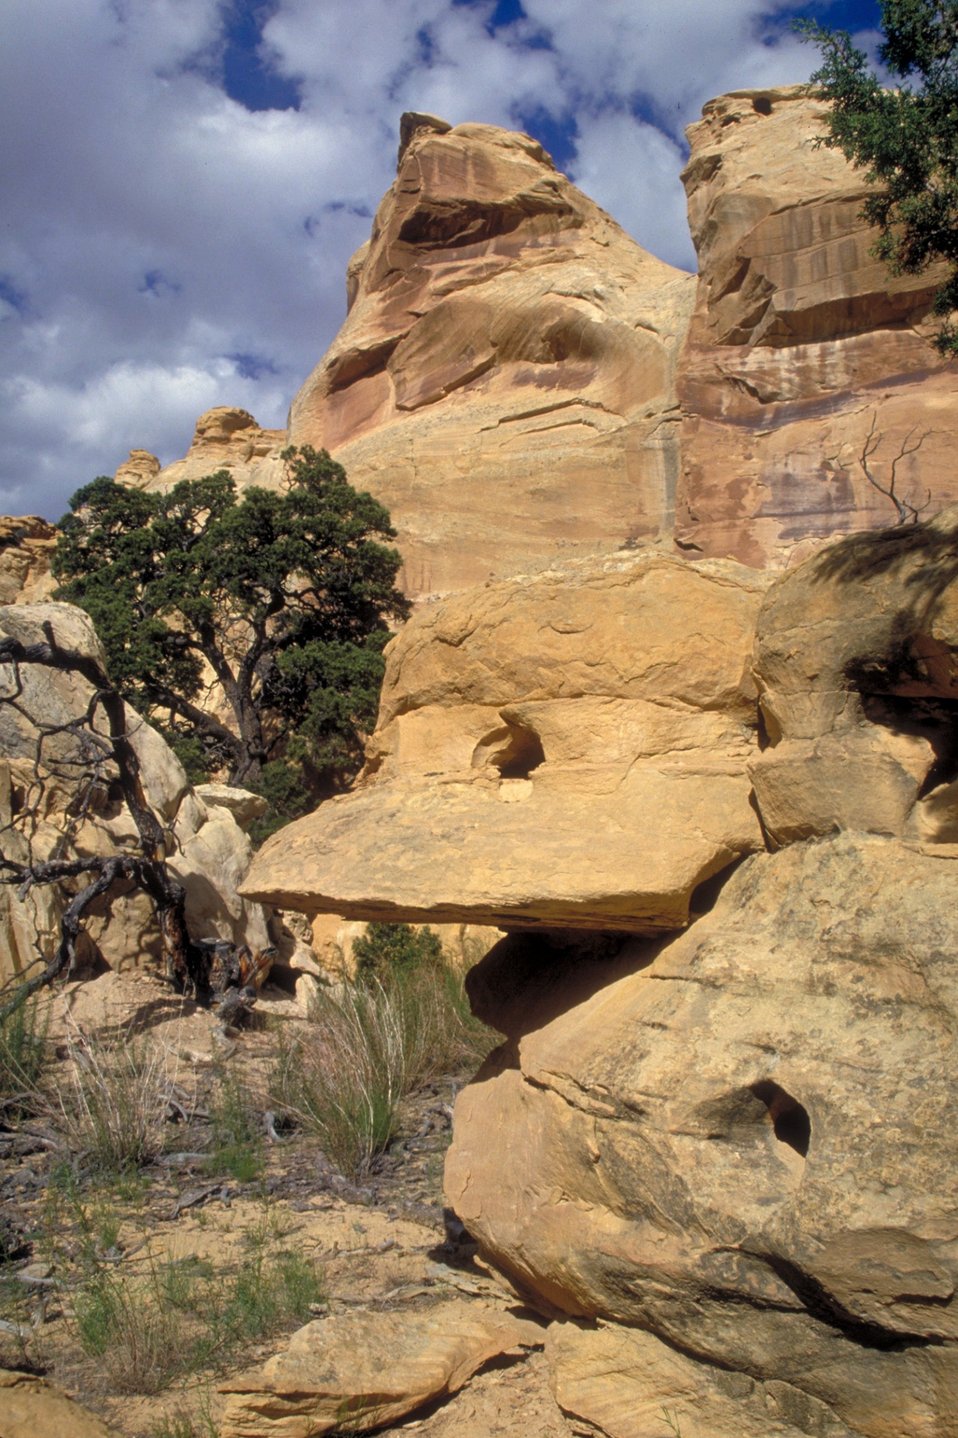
Head of Sinbad, San Rafael Swell